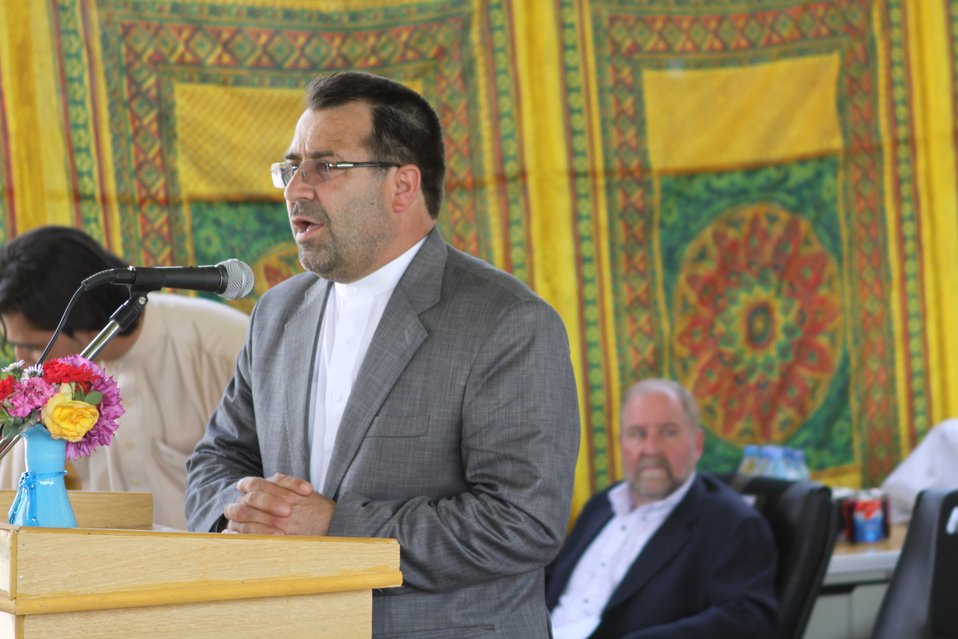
Bolan Poultry Farm